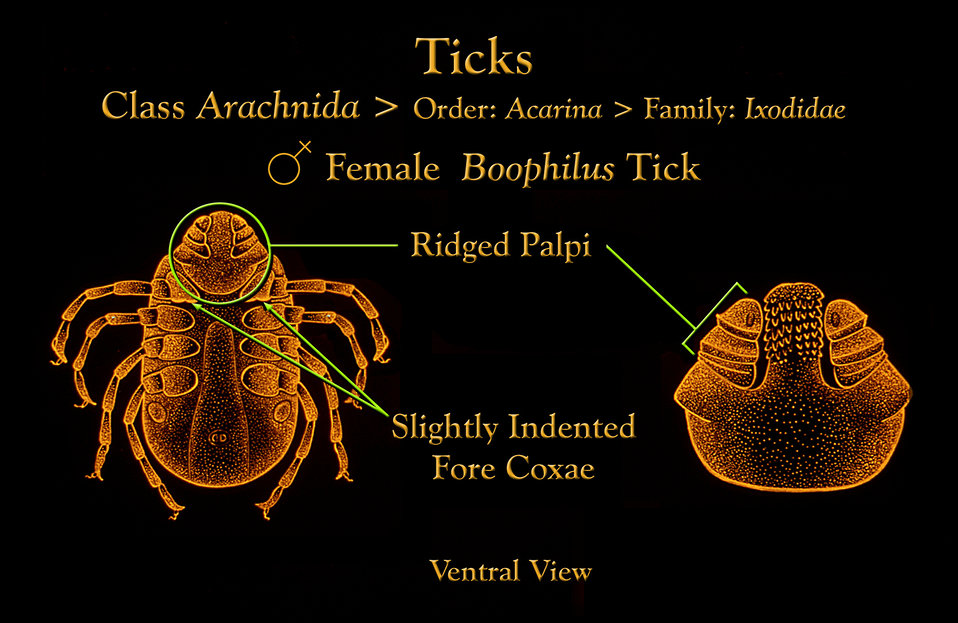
This illustration depicts a female Boophilus tick from the ventral view showing its ridged palpi, and indented fore coxae.